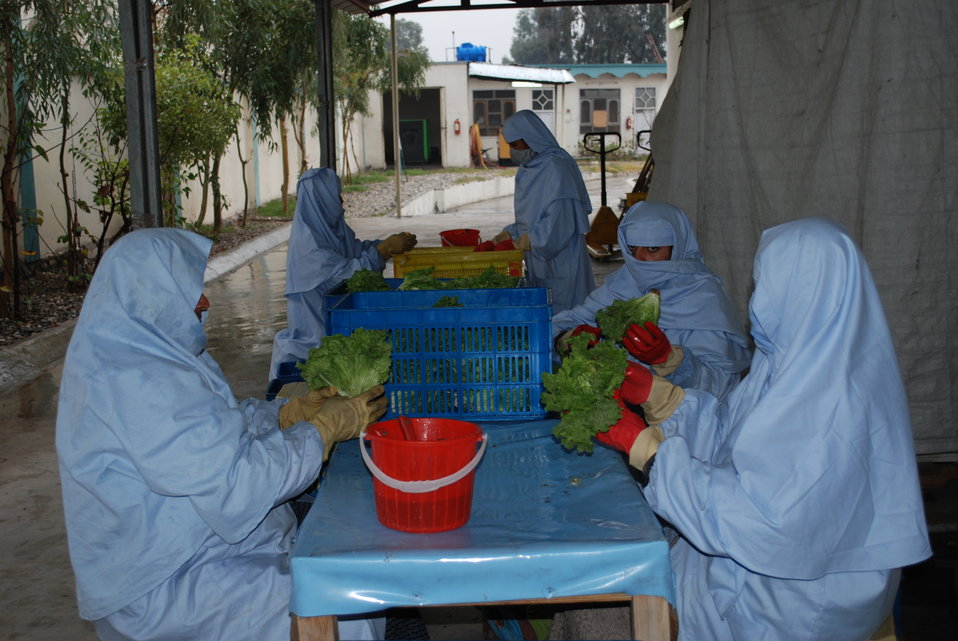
'On the Road' in Nangarhar Province